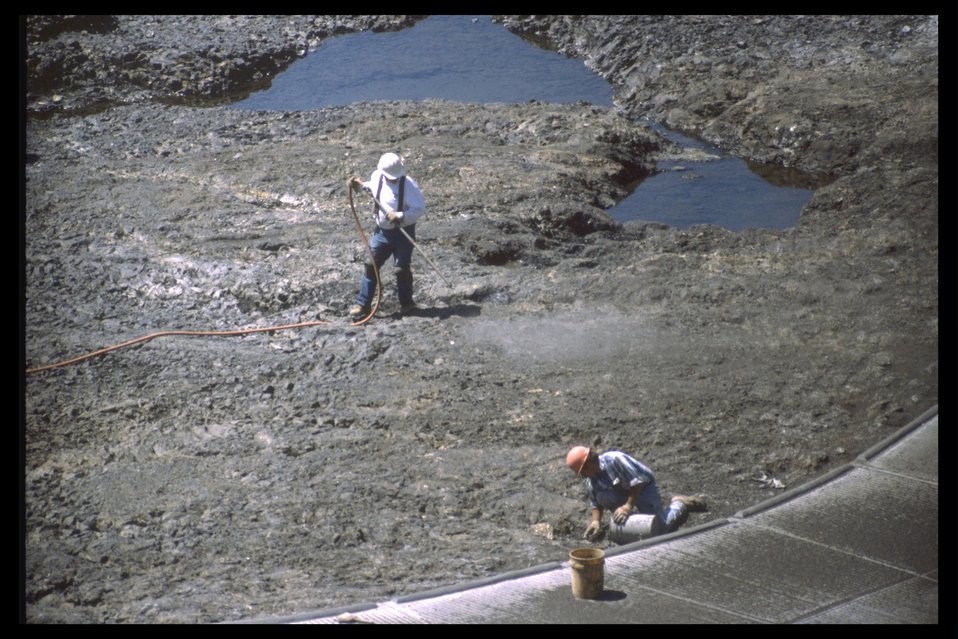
Construction of Quarry Cove tidepools.